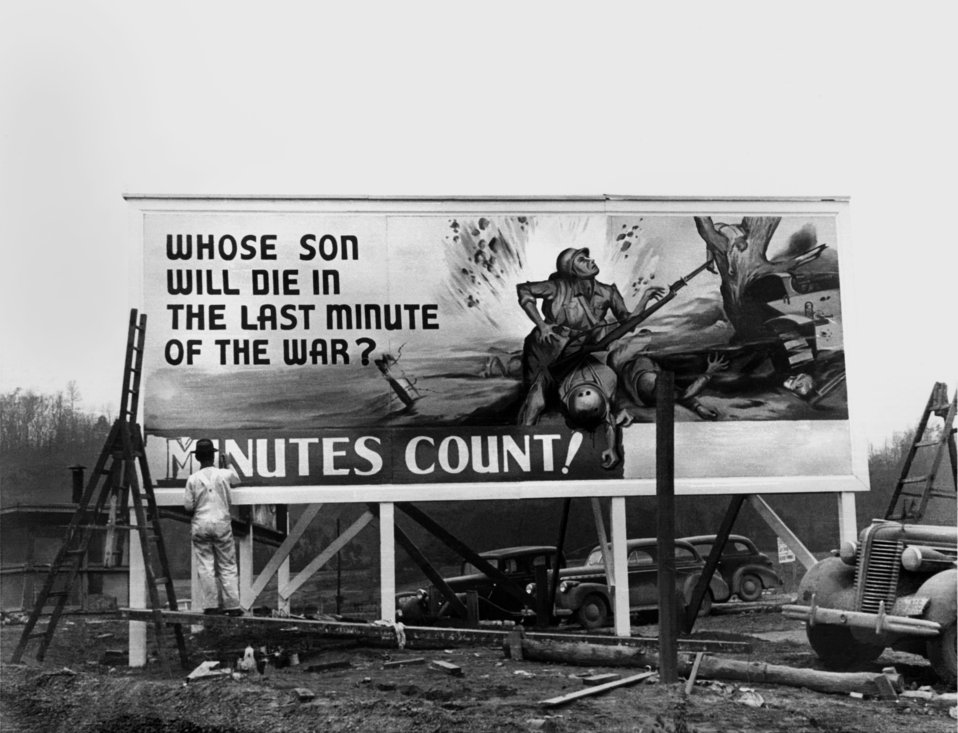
Billboard in Oak Ridge

Roll172 DOE photo by Ed Westcott

Billboard in Oak Ridge Tennessee 1/21/1944